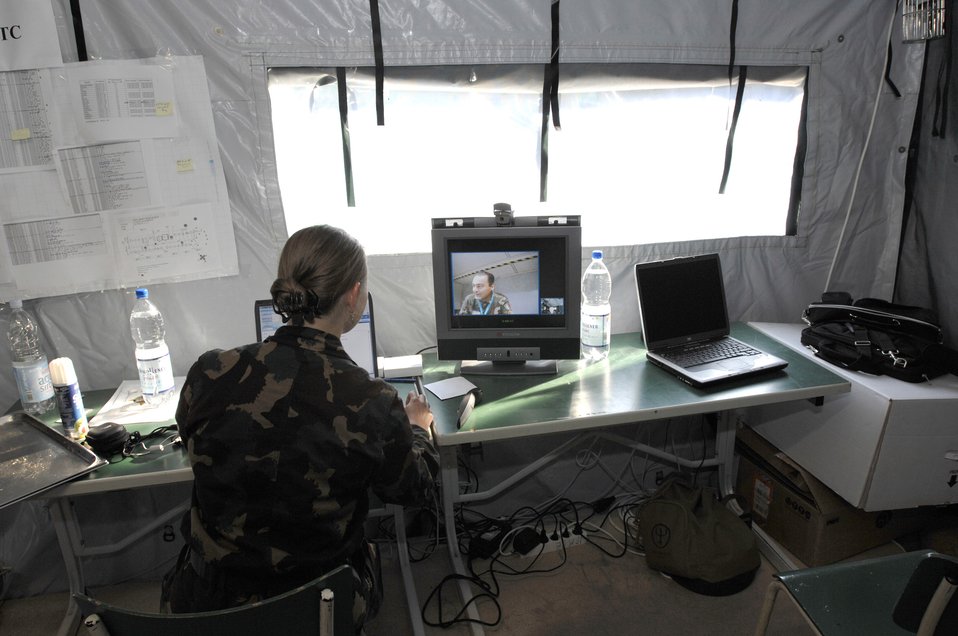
Multinational communicators network at seminars

Hungarian army 1st Lt. Natalin Barkos checks the voice-over-internet-protocol connection and video feed during the testing phase of exercise Combined Endeavor 2007 in Lager Aulenbach, Baumholder, Germany. The exercise, a U.S. European Command-sponsored exercise, brings the U.S. and other nations together, especially those in NATO or Partnership for Peace, to plan and execute interoperability testing of command, control, communications and computer systems in preparation for future combined humanitarian, peacekeeping and disaster relief operations.